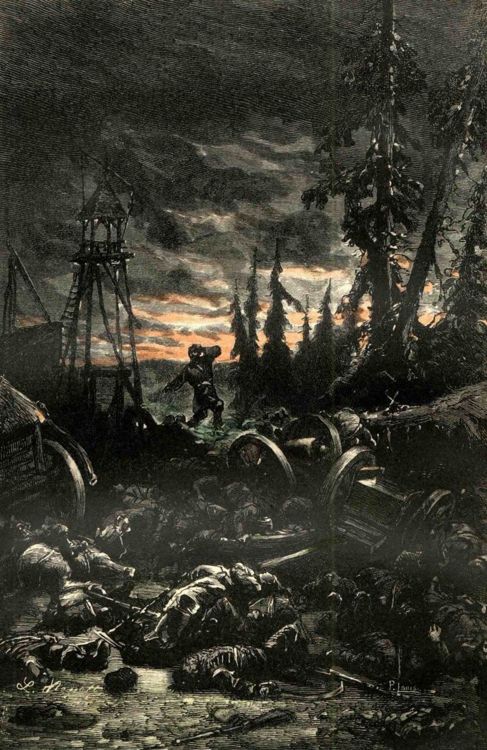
An illustration from the novel 'Michael Strogoff: The Courier of the Czar' by Jules Verne drawn by Jules Férat. Polski: Ilustracja powieści Juliusza Verne'a 'Michał Strogow, kurier carski' autorstwa Julesa Férata. Français : 'Michel Strogoff. Le courier du tzar', Jules Férat. Français : Le champ de bataille de Kolyvan.